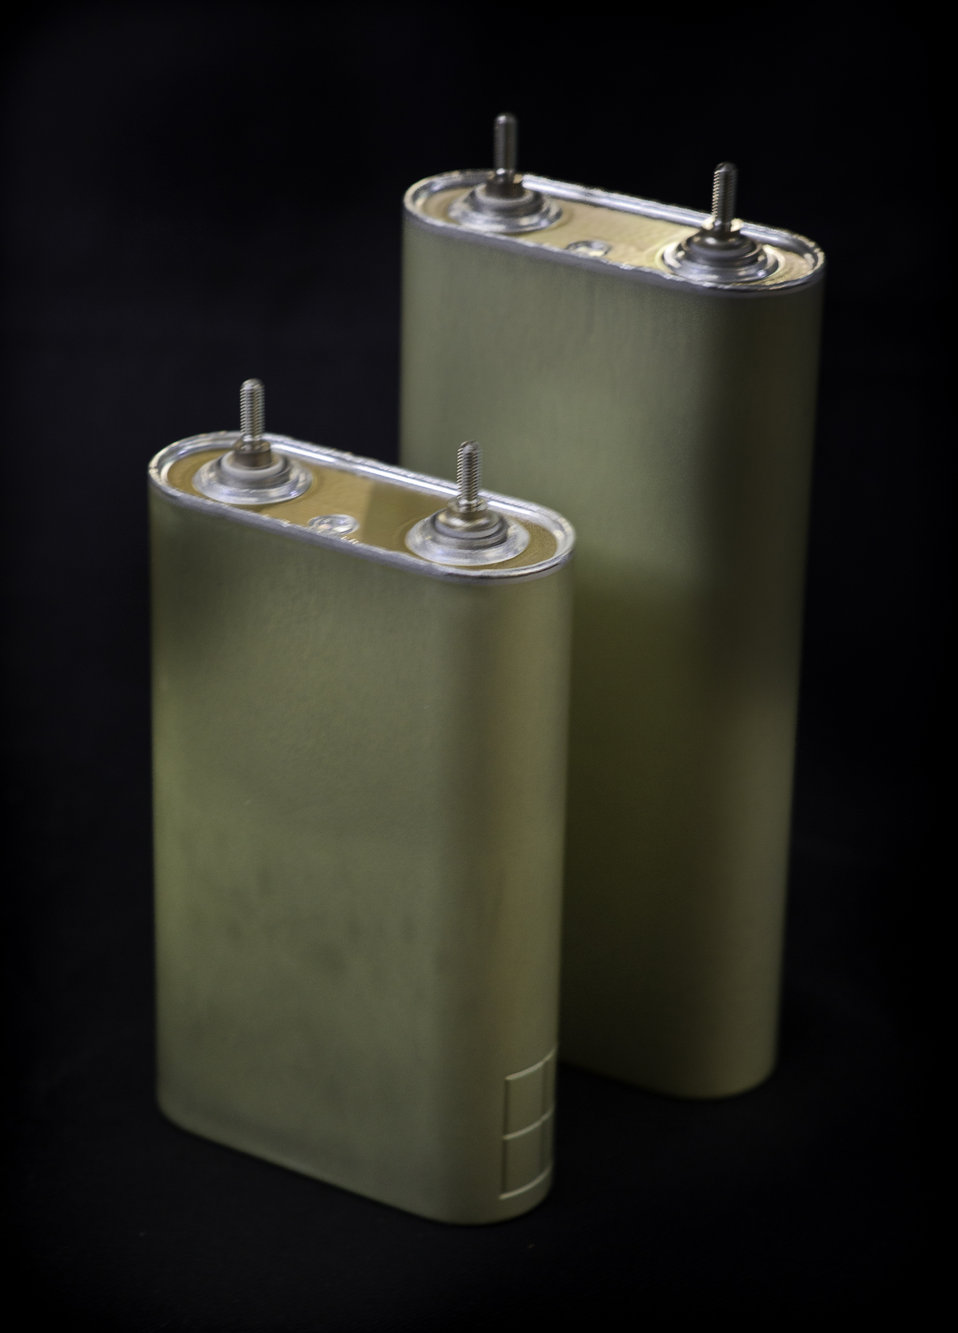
Battery modules being tested at the Thermal Test Facility at the National Renewable Energy Laboratory.